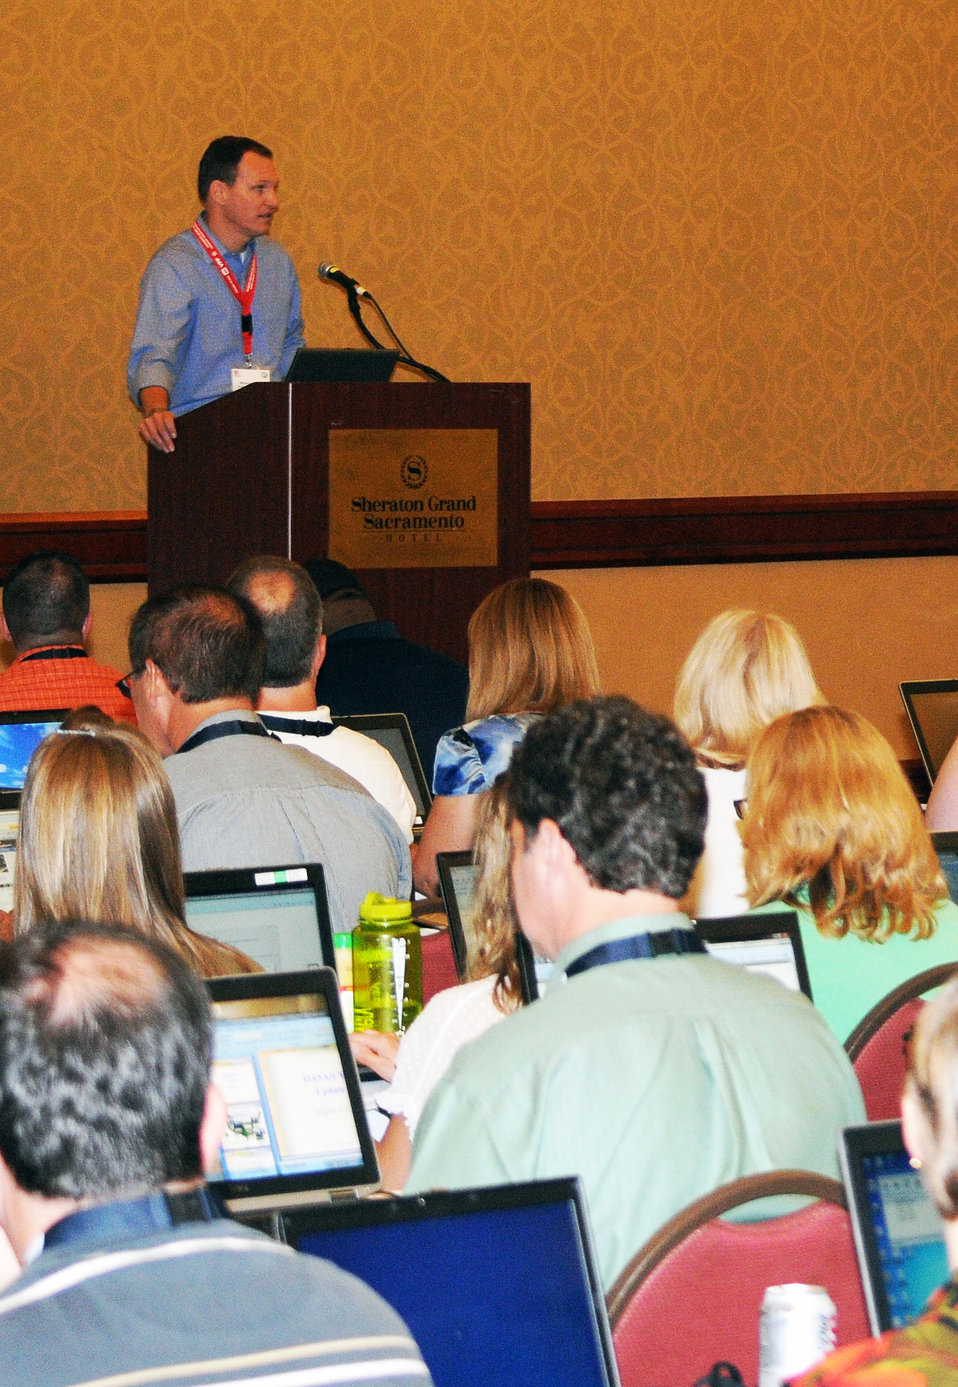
National Regulatory Conference 2012

Mike Jewell, regulatory division chief for the U.S. Army Corps of Engineers Sacramento District, speaks to more than 170 regulators at this year’s National Regulatory Conference in Sacramento, Calif., Aug. 7, 2012. The national conference, which ran from Aug. 6-9, provided regulators the opportunity to share ideas and discuss ways to improve the permit program for the public.

The Department of the Army's regulatory program is one of the oldest in the federal government and currently authorizes over $220 billion in economic development projects including transportation, energy, residential and commercial development while working to minimize impacts to U.S. waterways and wetlands.